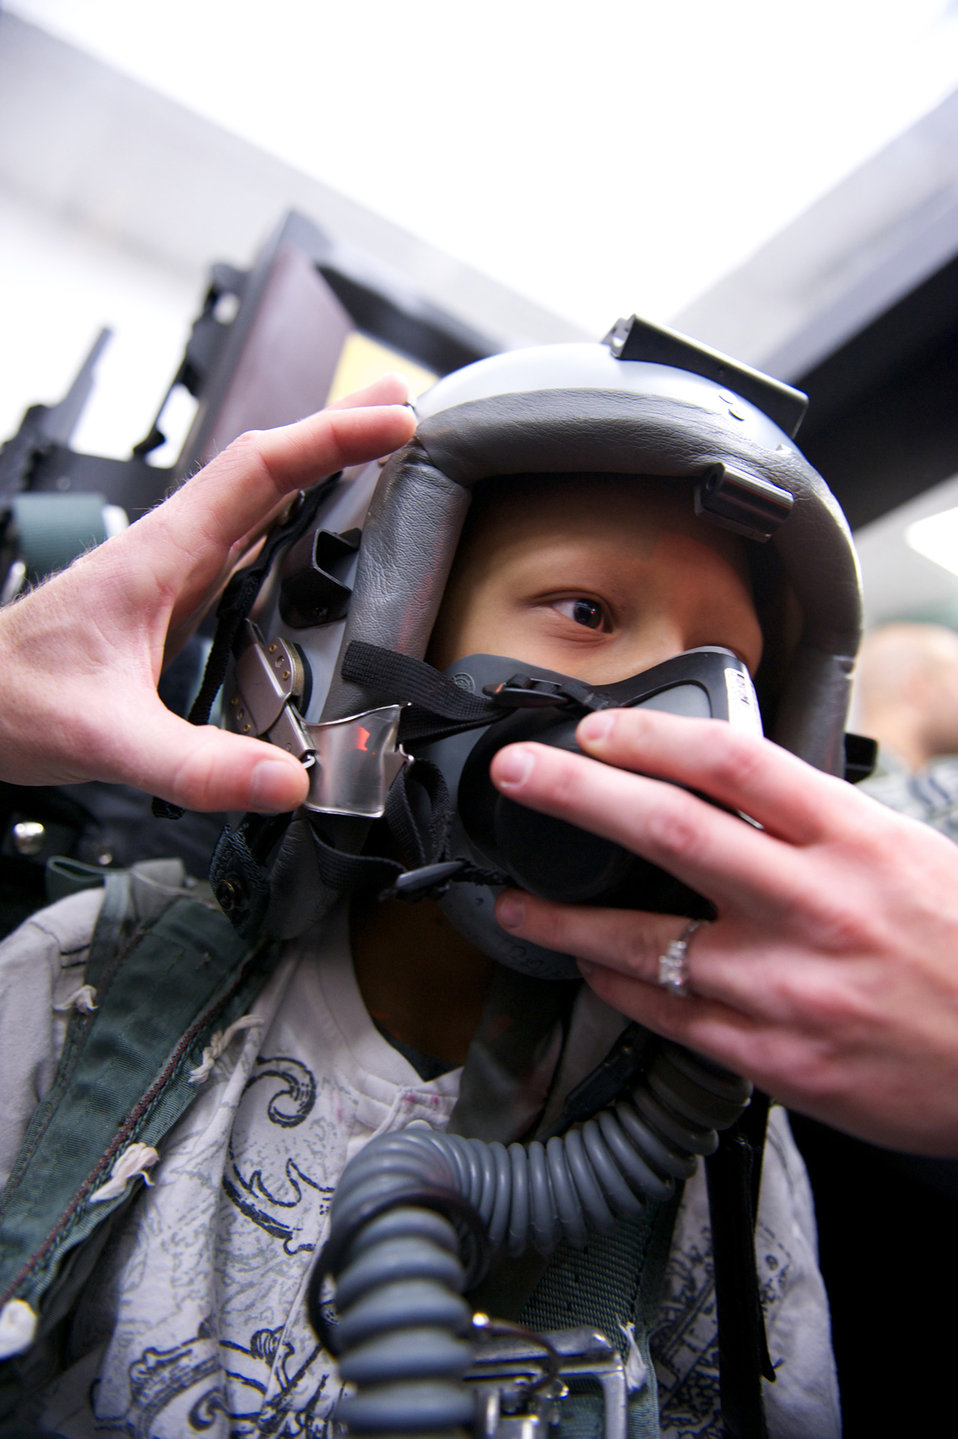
PB

Airmen with the 3rd Operations Group help Alex Metzger-Jacobs, 10, with an F-22 Raptor egress procedure trainer Oct. 29, 2010, at Joint Base Elmendorf-Richardson. Alex enjoyed a tour of several 3rd Operations Group units with Big Brother Big Sisters members.